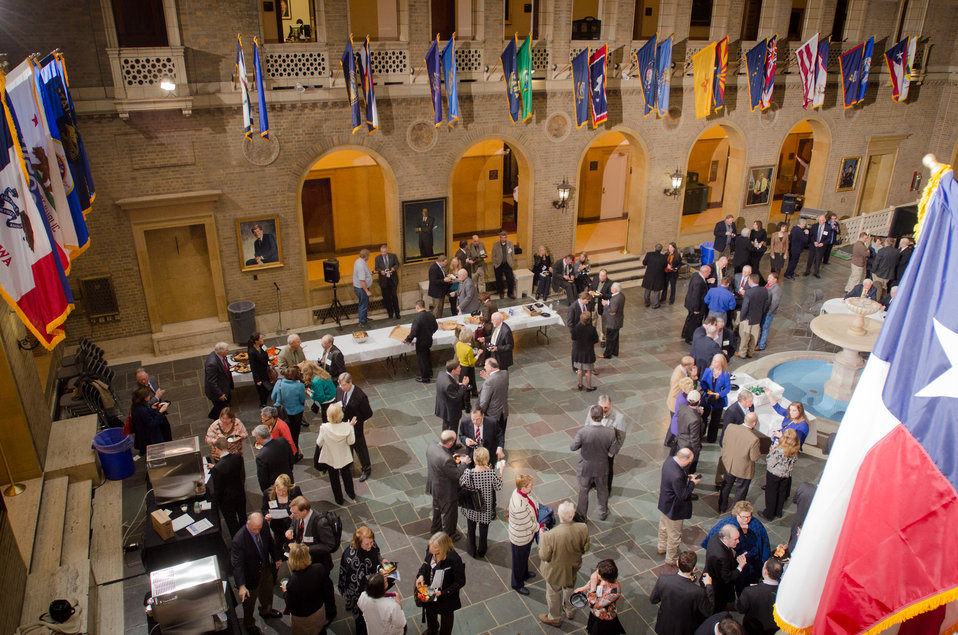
Agriculture Secretary Tom Vilsack and U.S. Department of Agriculture (USDA)Food and Nutrition Service (FNS) leadership meet with dairy producers, Dairy Management, Inc., (DMI) during a luncheon in the Whitten Building Patio, in Washington, D.C. on Tuesday, Feb. 26, 2013. DMI Chief Executive Officer Tom Gallagher presented Secretary Vilsack and the USDA team, a National Football League Fuel Up to Play 60 helmet for the work that USDA has done in support of the dairy industry. The keynote speaker was former National Football League Pittsburgh Steelers halfback Robert Patrick 'Rocky' Bleier, who told of the importance of milk in his childhood growth, and recounted some of his historic game-winning football plays. Served at the luncheon were Smart Slice pizzas provided by Dominos who use 51% whole-wheat flour with reduced salt and fat toppings; and meet the current USDA school nutrition requirements. During the event Agriculture Under Secretary for Food, Nutrition and Consumer Services Kevin Concannon mentions that The Good Cow Company milks (that retain it's freshness longer than standard milks) have been approved for purchase and use in schools.